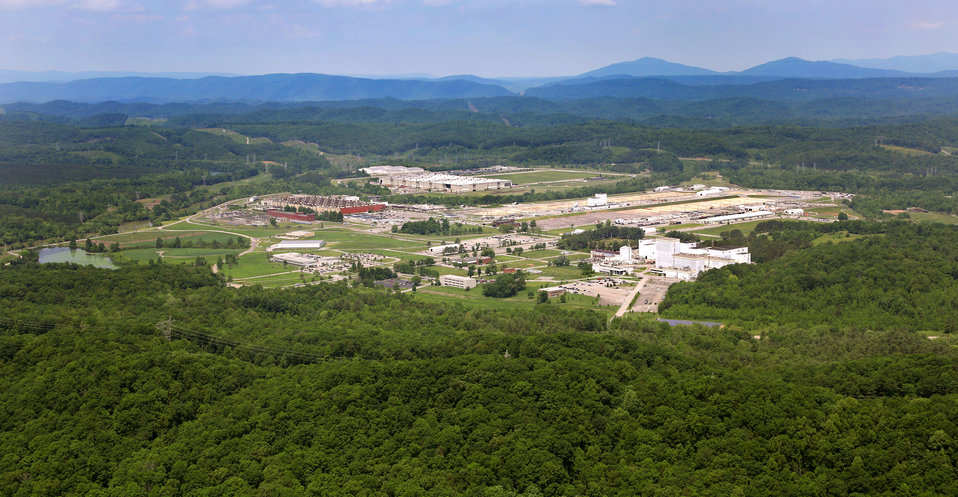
ETTP aerial 2014 Oak Ridge

JRO 0379 ORNL photo Jason Richards 5-20-2014 Oak Ride Tennessee